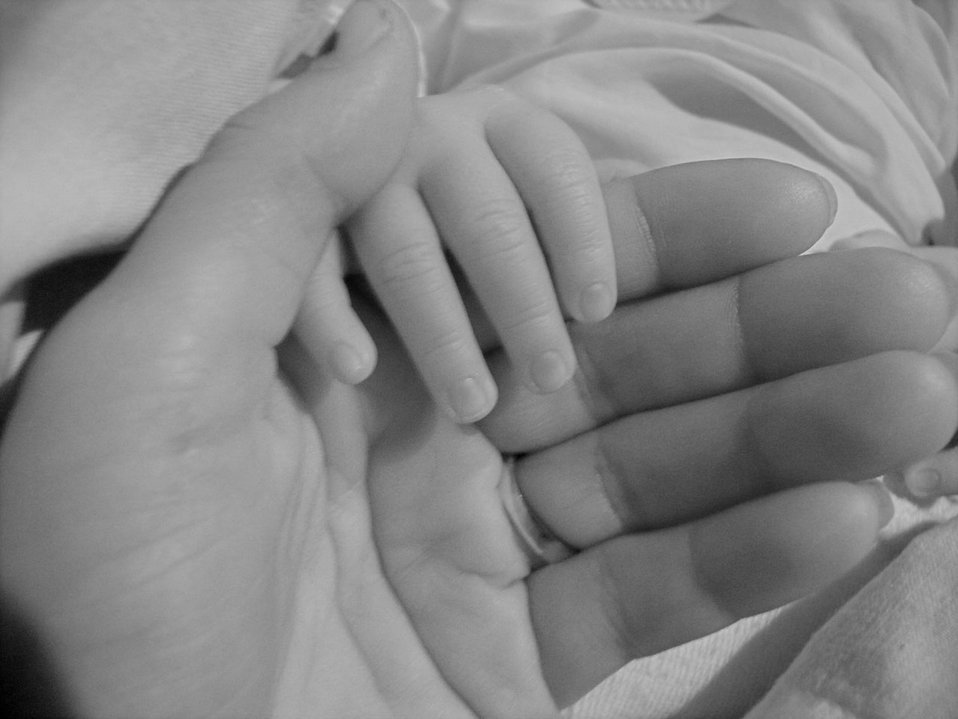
Mother and baby.